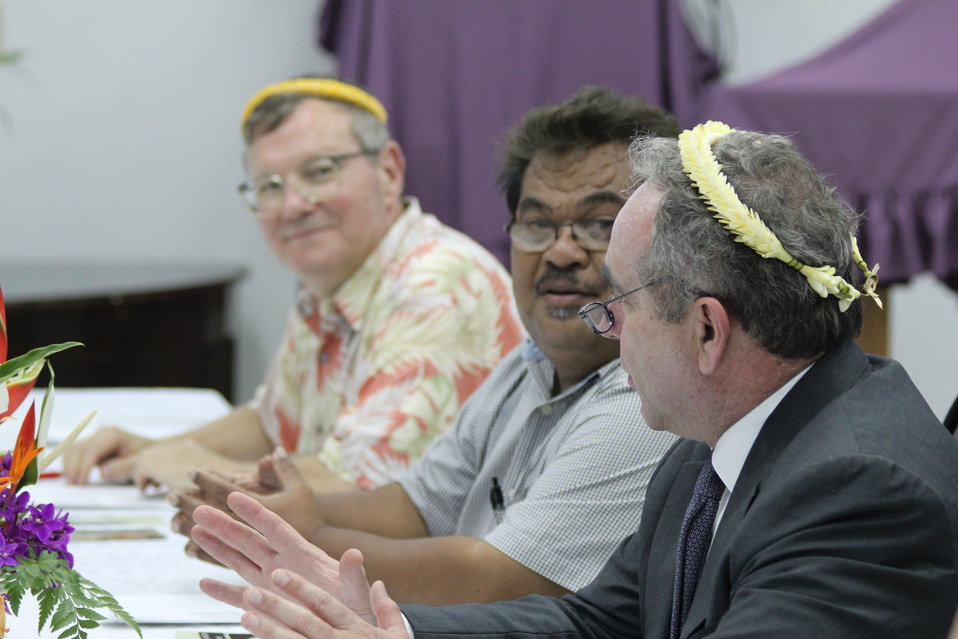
Assistant Secretary Campbell Discusses Climate Change

Assistant Secretary of State for East Asian and Pacific Affairs Kurt Campbell, joined by Assistant Administrator Biswal, holds a roundtable discussion with environmental non-government organization (NGO) leaders from Micronesia Conservation Trust, the Nature Conservancy, Conservation Society of Pohnpei, and the Island Food Community of Pohnpei in Palikir, Pohnpei, on July 1, 2011. The conversation highlights NGO efforts to promote conservation at the local and regional levels, challenges faced by low-lying remote atolls, and tools and support available for effective conservation efforts. Participants include Pohnpei State Governor John Ehsa, center, and U.S. Ambassador to the Federated States of Micronesia Peter A. Prahar, right.